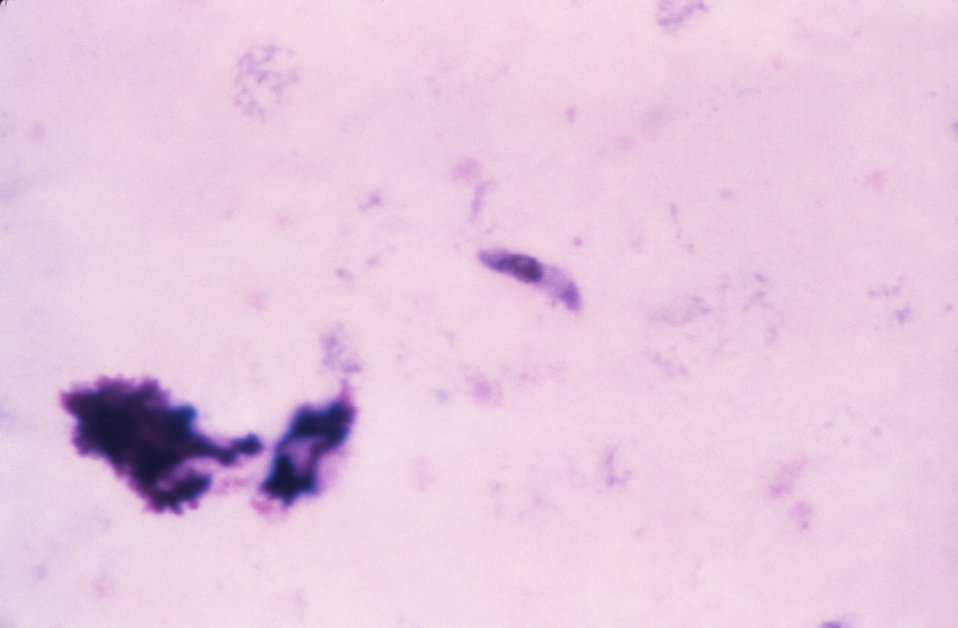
This thick film Giemsa stained micrograph reveals the presence of a mature P. falciparum gametocyte.